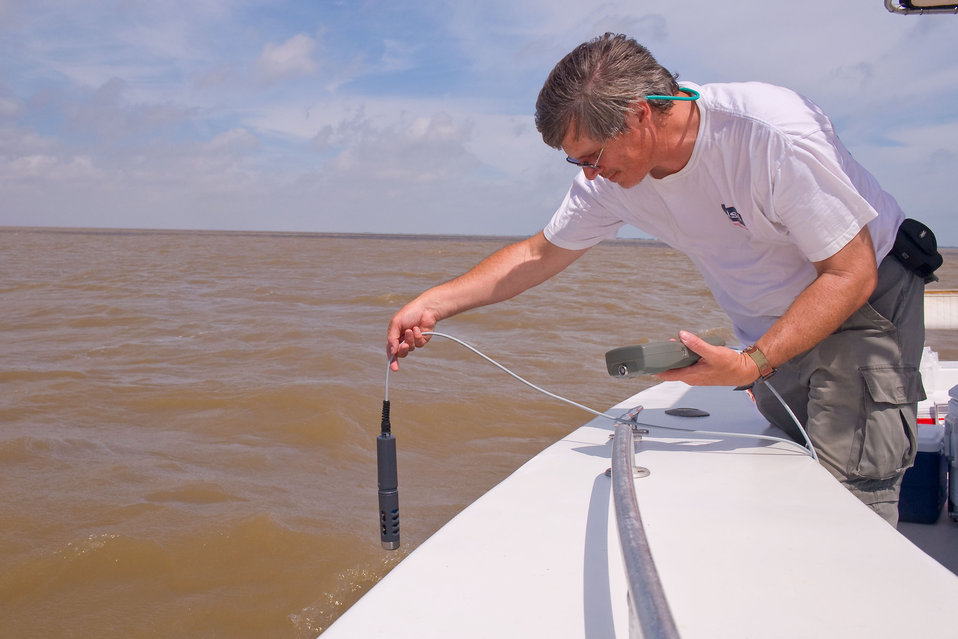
Water testing in the Gulf in response to the BP oil spill

May 12, 2010. Salinity, temperature, Ph testing. Curtis Franklin, Dougherty Srague Environmental Inc. EPA contractor.